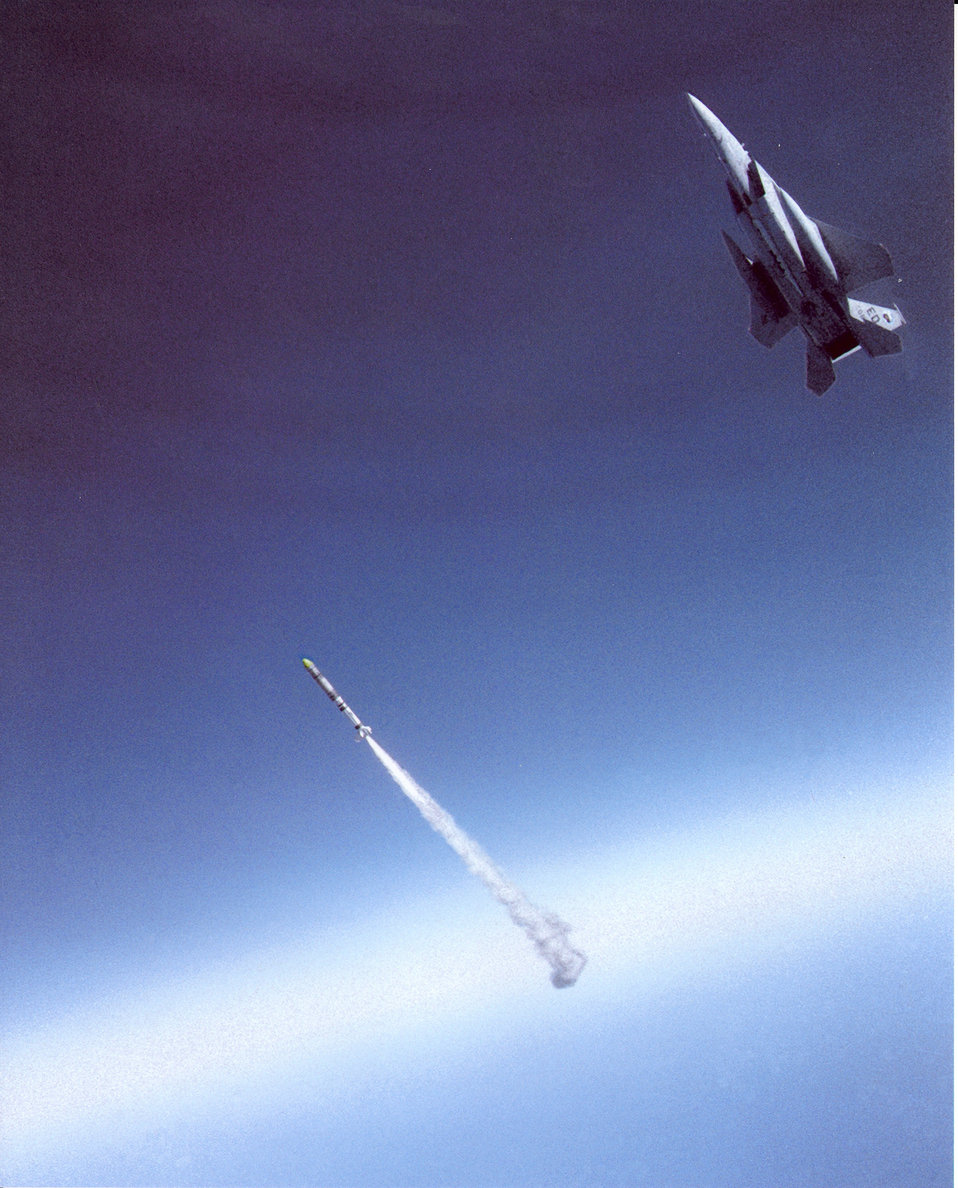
Anti-satellite launch

Maj. Wilbert